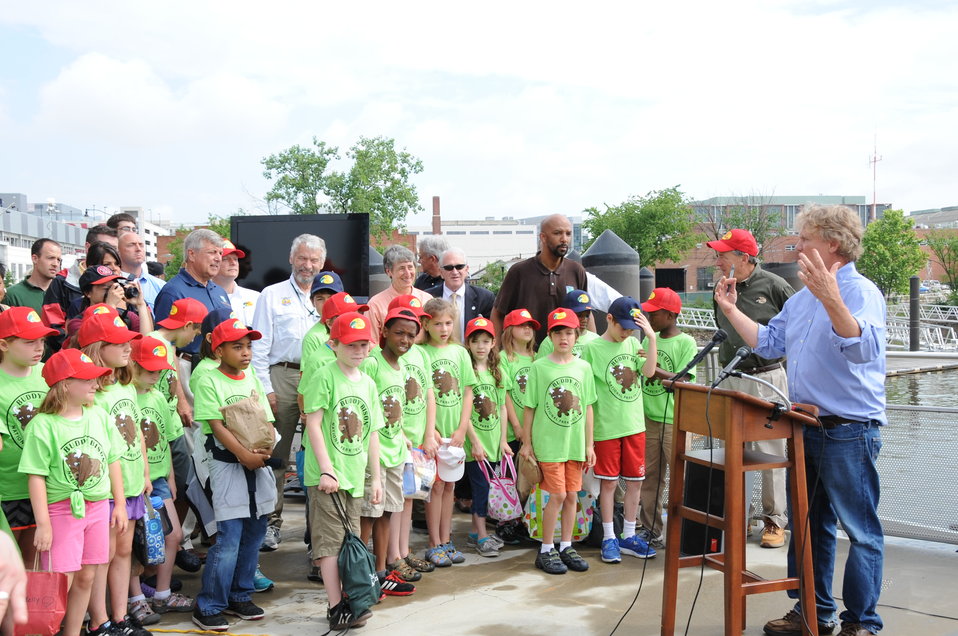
2013 National Fishing and Boating Week

Local students prepare to enjoy fishing at the annual kick-off of National Fishing and Boating Week on the Anacostia River in Washington D.C.